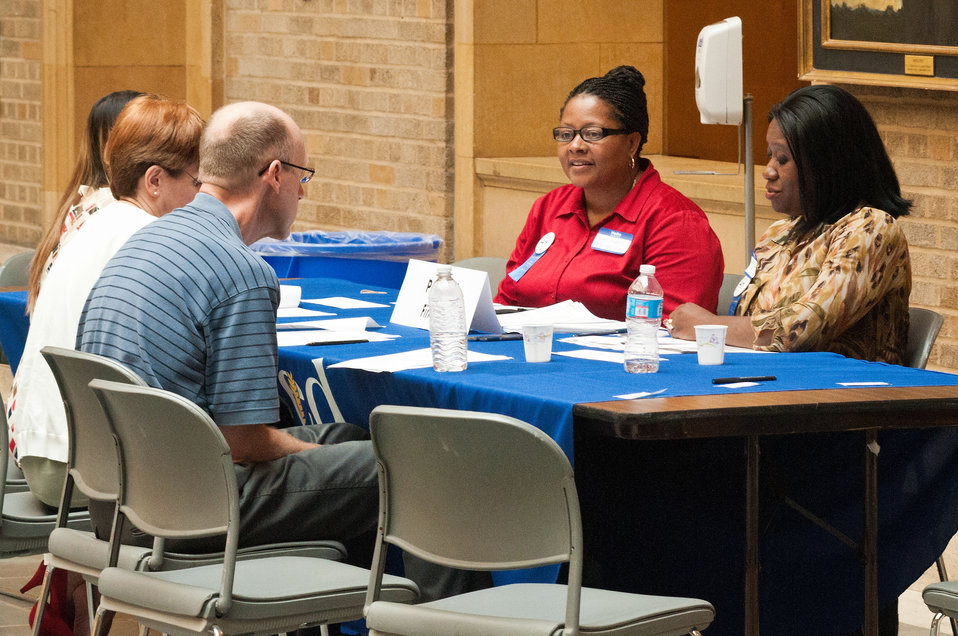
Agriculture Federal Credit Union representatives Barbara Campbell (left) and Theodora Ezekwerre (right) assist employees with personal finance questions during one of the many forums held for the Rural Development Cultural Transformation Day event held in Washington, D.C. on Thursday, July 12, 2012.